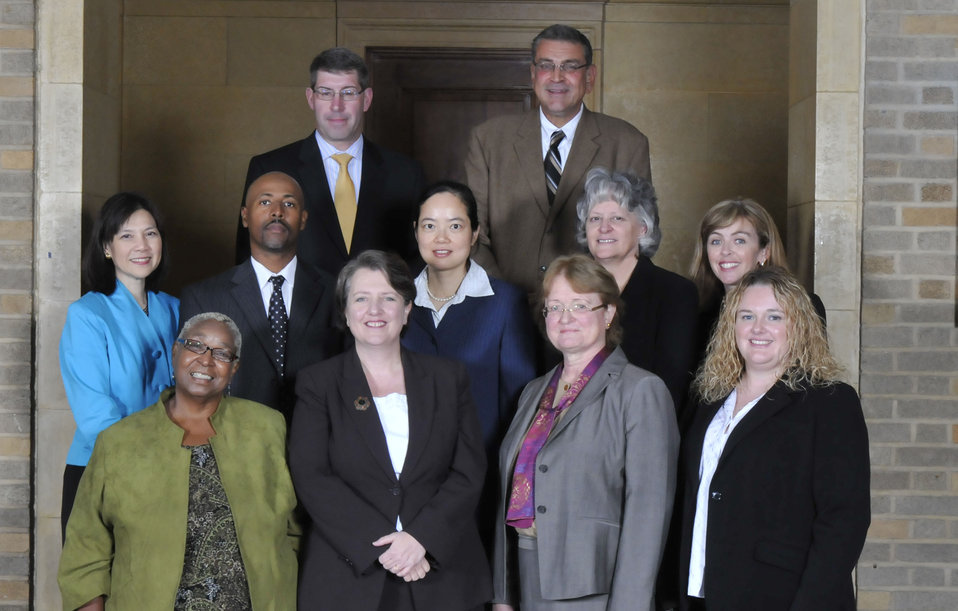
Animal Welfare Team
Office of Inspector General, Washington DC
Barbara B. Gladfelter, Group Leader
For outstanding audit and investigation work on the sensitive issue of animal abuse. On September 14, 2011 in the patio of the Whitten Building Patio of the US Department of Agriculture in Washington, DC.